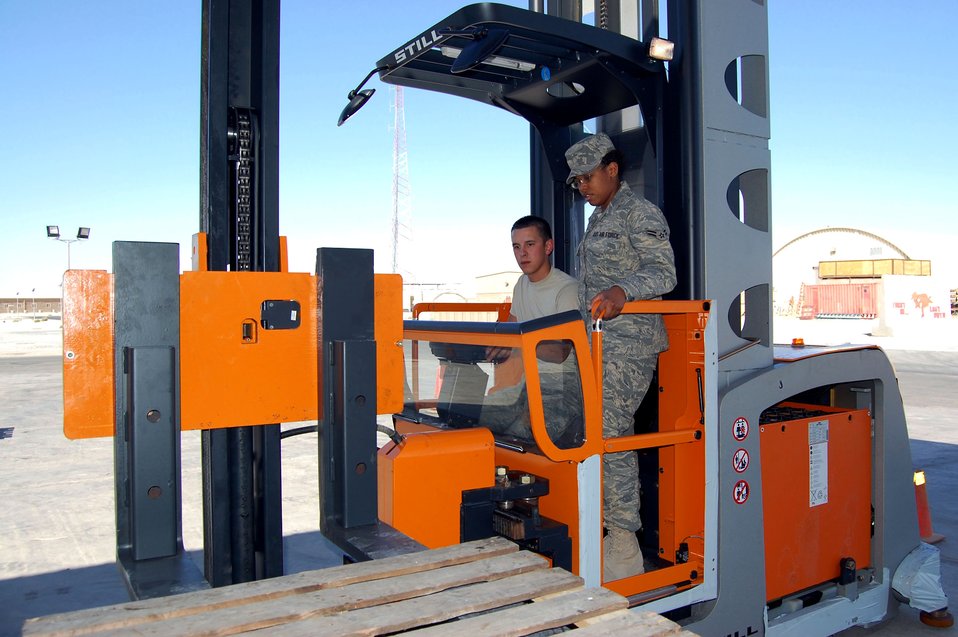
Airmen prepare servicemembers to fight

Airman 1st Class Nicholas Guillory teaches Airman 1st Class Charity Carter how to operate the new shelf loading forklift Nov. 7 at the expeditionary theater distribution center in Southwest Asia. Both Airmen are assigned to the 386th Expeditionary Logistics Readiness Squadron and are stationed at Barksdale Air Force Base, La.